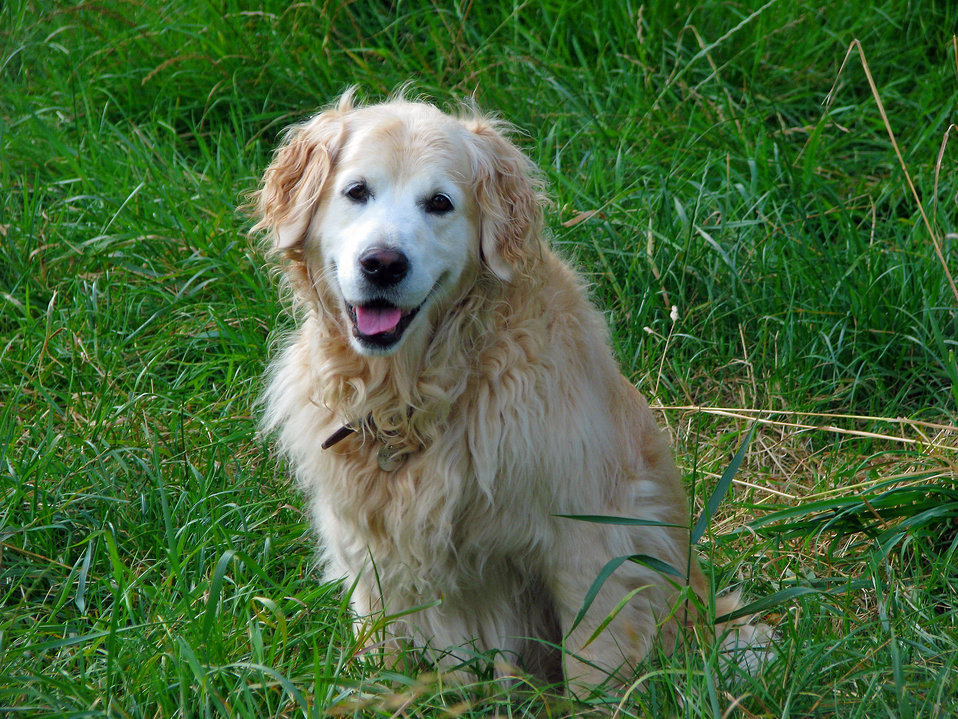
Golden retriever dog

Portrait of a beautiful golden retriever dog sitting in the grass.